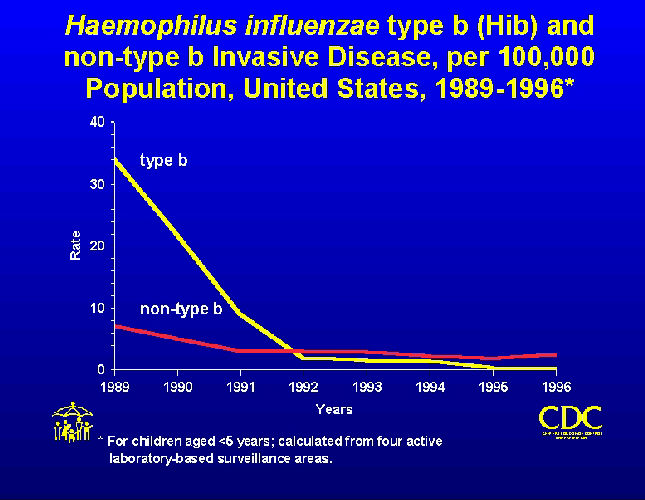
Incidence of Haemophilus influenzae type b and non-type b invasive disease, 1989-1996.